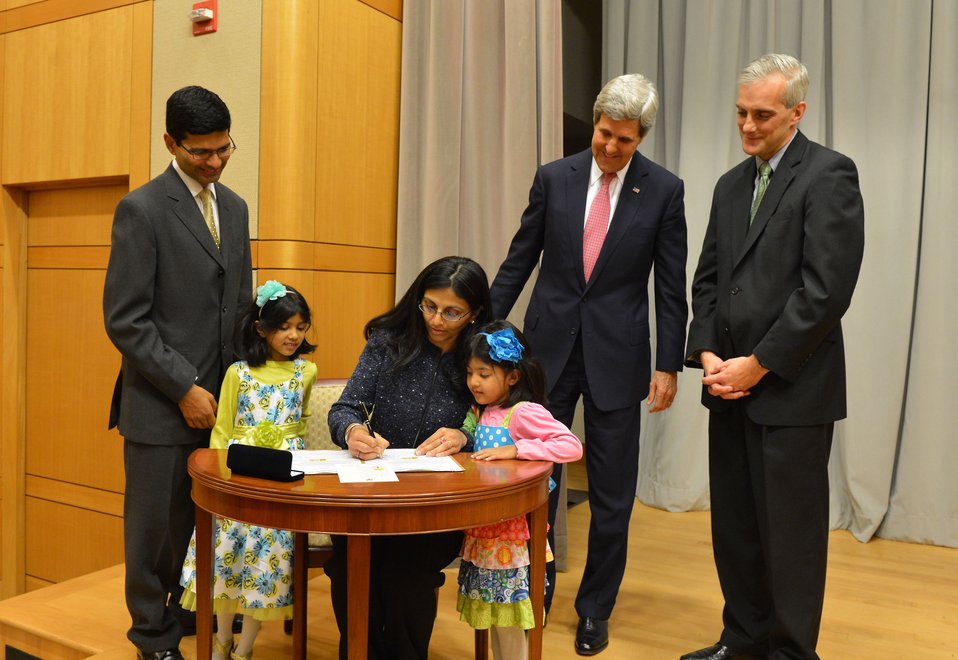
Nisha Desai Biswal Signs Her Appointment Papers to Become Assistant Secretary

Watched by U.S. Secretary of State John Kerry and her family, Nisha Desai Biswal signs the appointment papers to become the Assistant Secretary of State for South and Central Asian Affairs at a swearing-in ceremony hosted by the Secretary at the U.S. Department of State in Washington, D.C., on November 21, 2013.